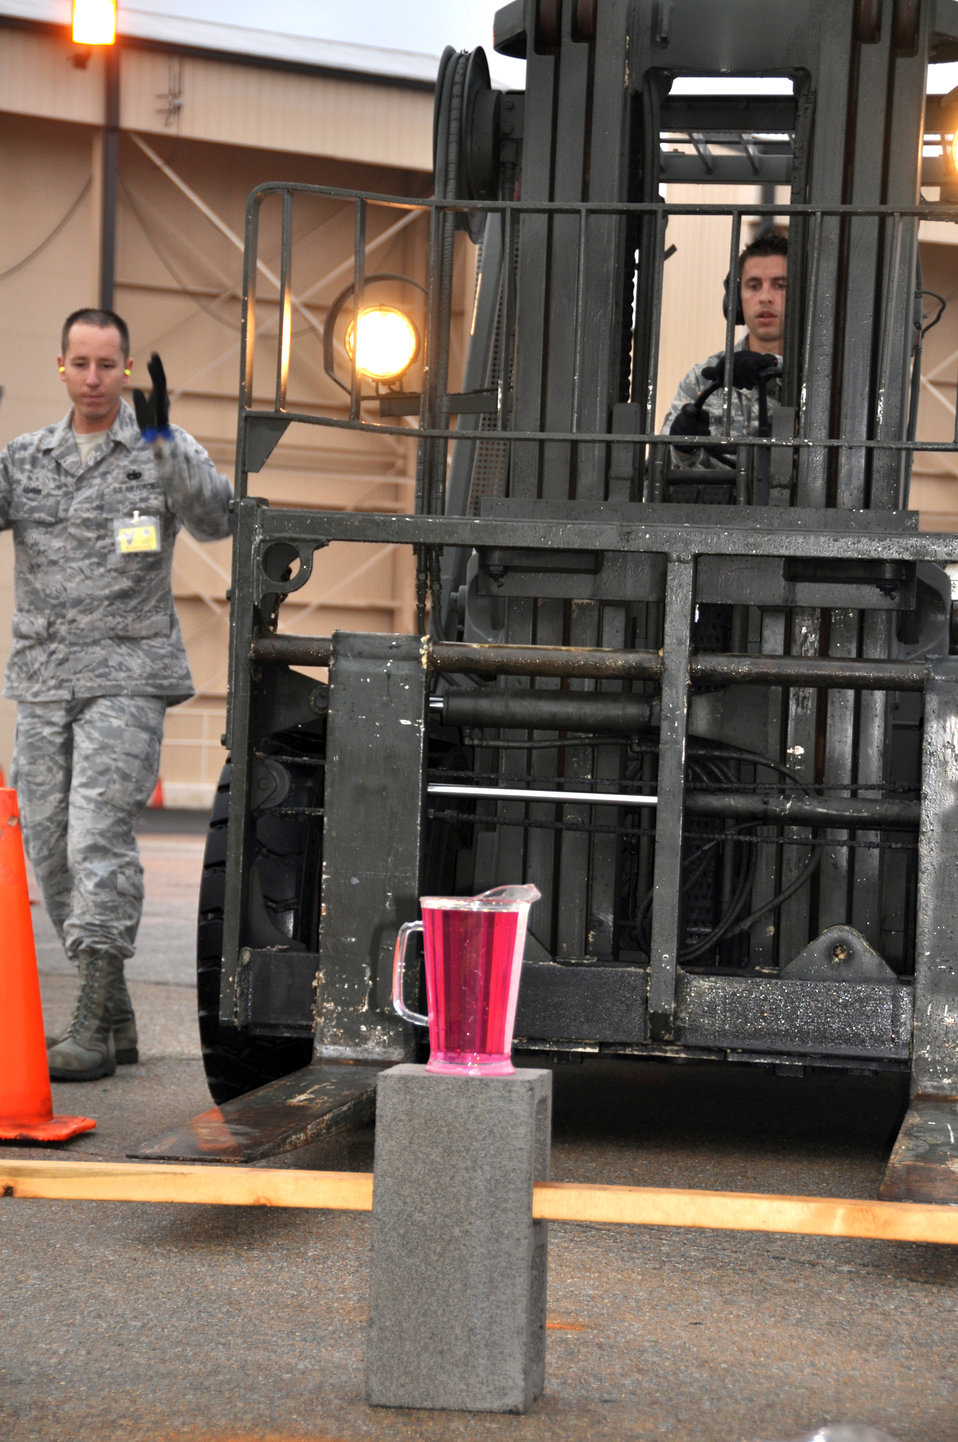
Port Dawg Challenge tests skills, strengthens camaraderie

Tech. Sgt. Justin Adams (left) guides Senior Airman Sterling Broadhead through a driving course Oct. 29, 2010, during the Port Dawg Challenge at Dobbins Air Reserve Base, Ga. In the timed event, Airman Broadhead had to maneuver a forklift through cones without spilling the contents of the pitcher. Sergeant Adams and Airman Broadhead are both assigned to the 67th Aerial Port Squadron from Hill Air Force Base, Utah.